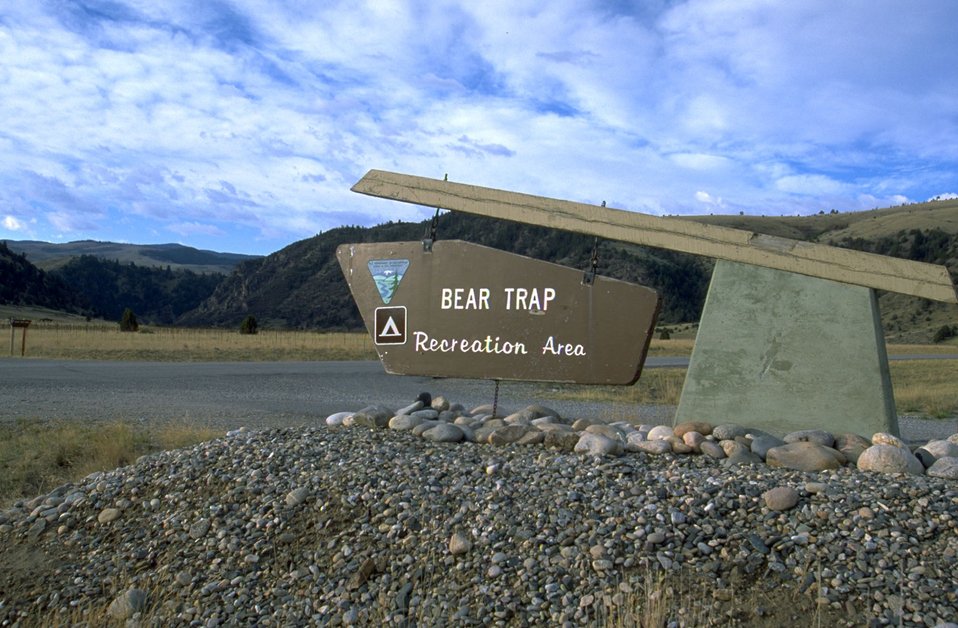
Bear Trap Recreation Area Sign